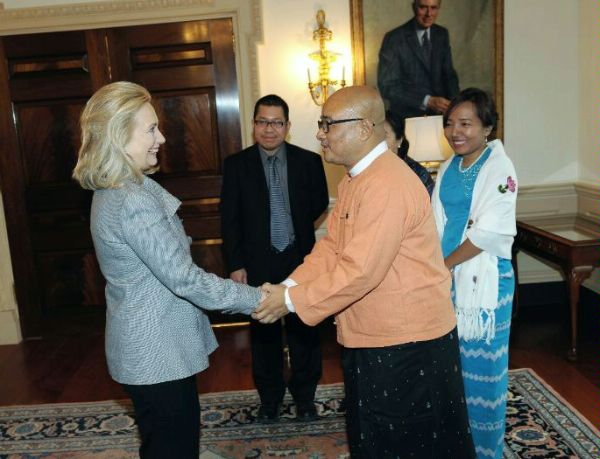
Secretary Clinton Greets Zaganar of Burma

U.S. Secretary of State Hillary Rodham Clinton greets Burmese comedian and recently-released former political prisoner Zaganar at the U.S. Department of State in Washington, D.C., on February 8, 2011.